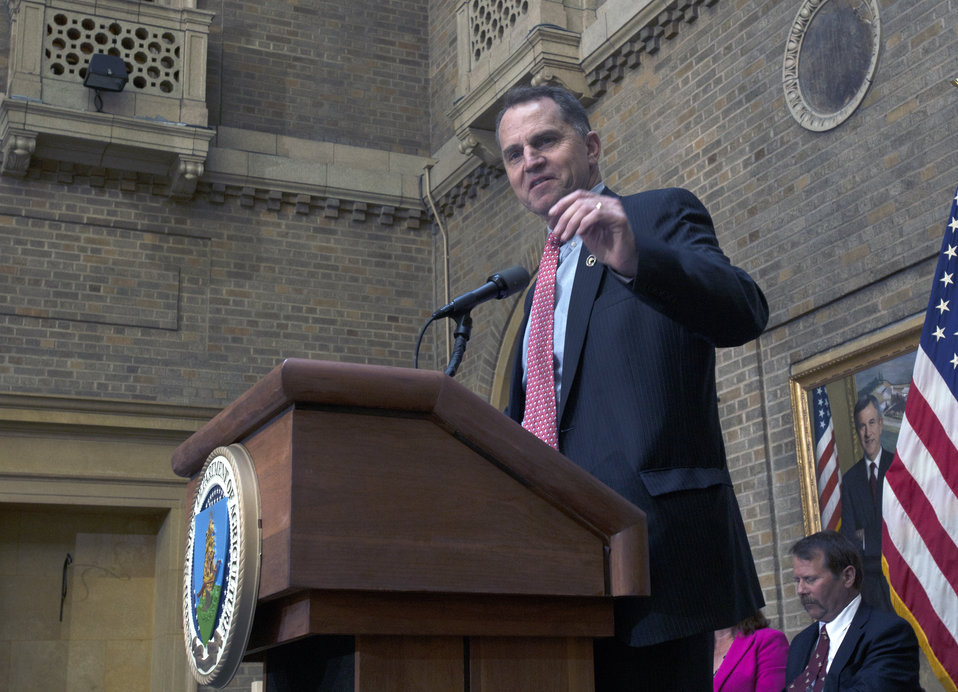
President of Ducks Unlimited George Dunklin speaks at the Ducks Unlimited/USA Rice Federation event at the U.S. Department of Agriculture (USDA) in Washington, D.C. on Tuesday, May 6, 2014.